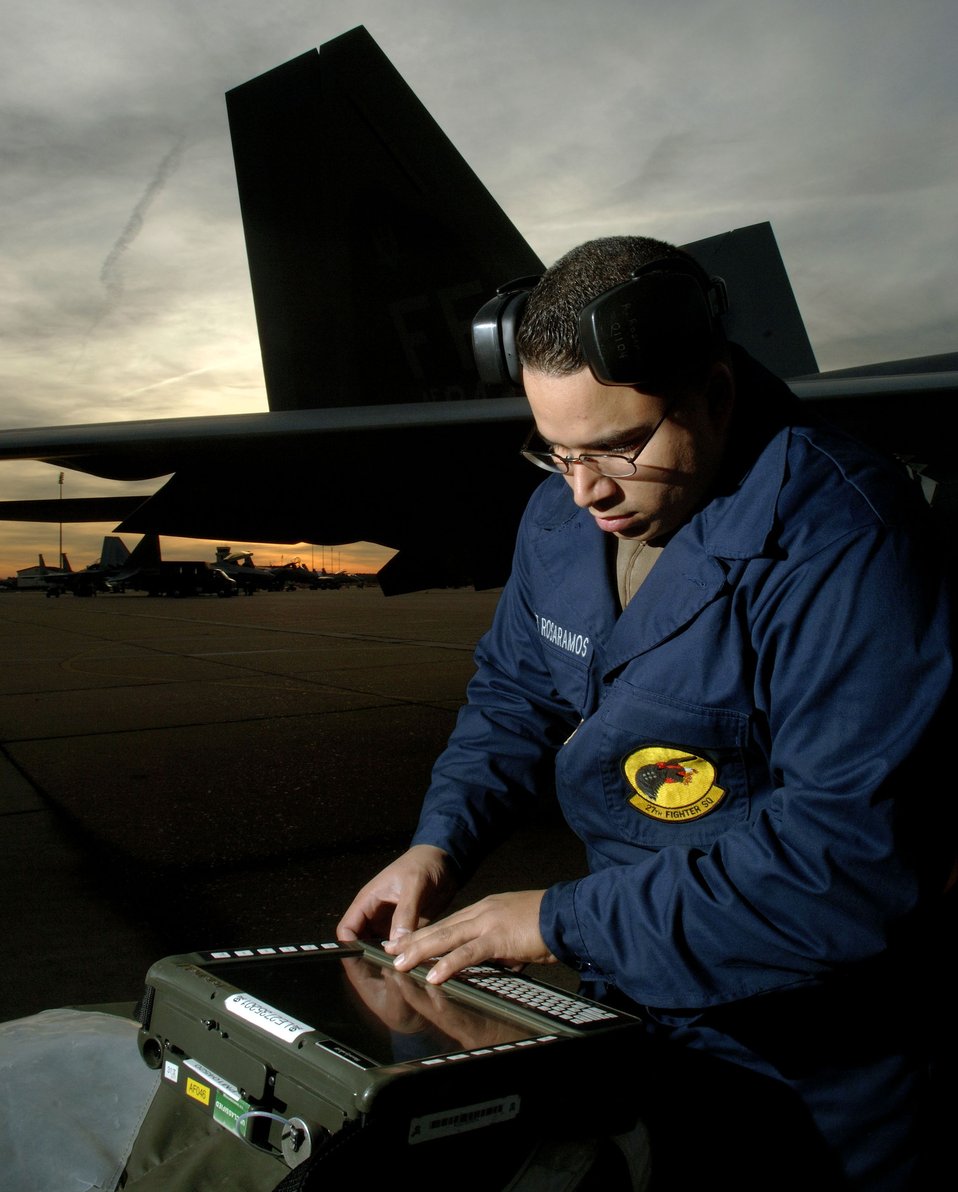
Operation Noble Eagle

LANGLEY AIR FORCE BASE, Va. (AFPN) -- Staff Sgt. Ramon Rosaramos checks the weapons load status on a portable maintenance adapter in preparation for the F-22A Raptor's first real-world Operation Noble Eagle mission. Sergeant Rosaramos is a weapons loader from the 27th Aircraft Maintenance Squadron.